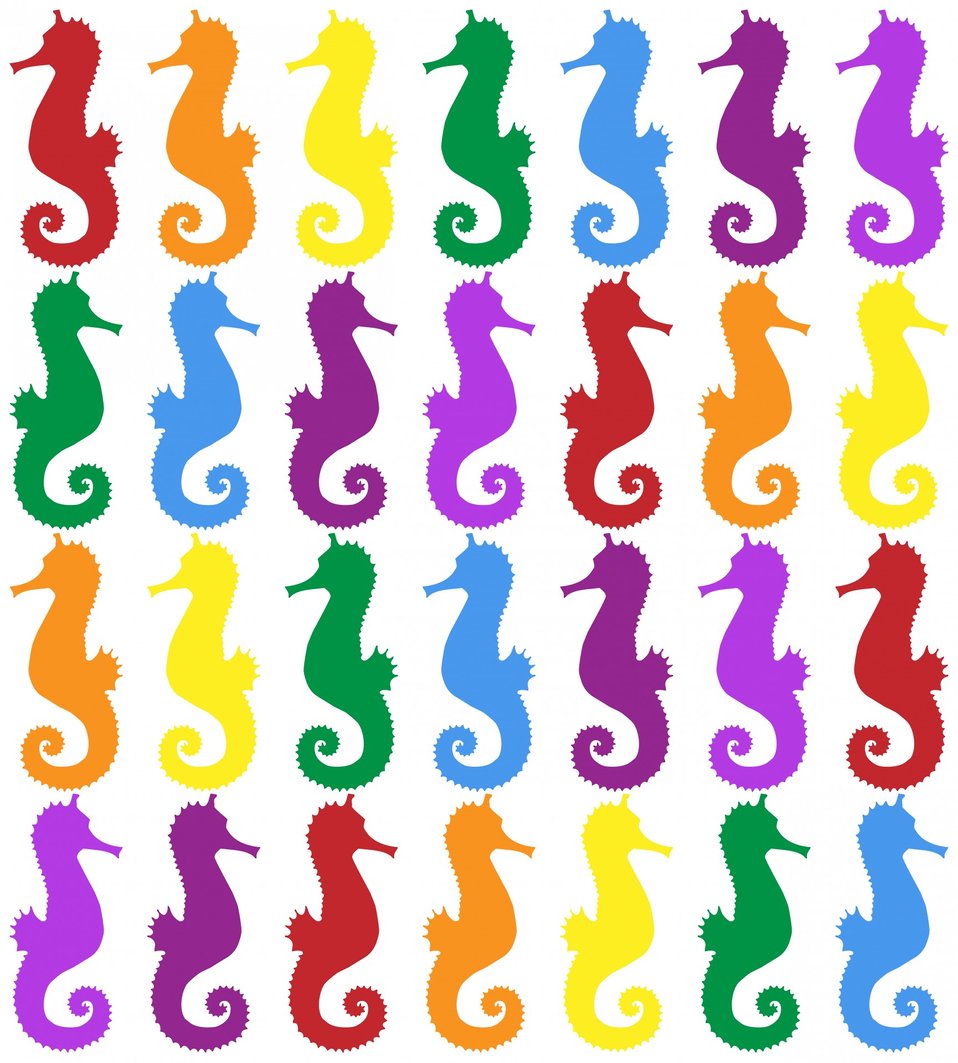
Seahorses colorful background

Rainbow colors seahorses clipart wallpaper background for scrapbooking.